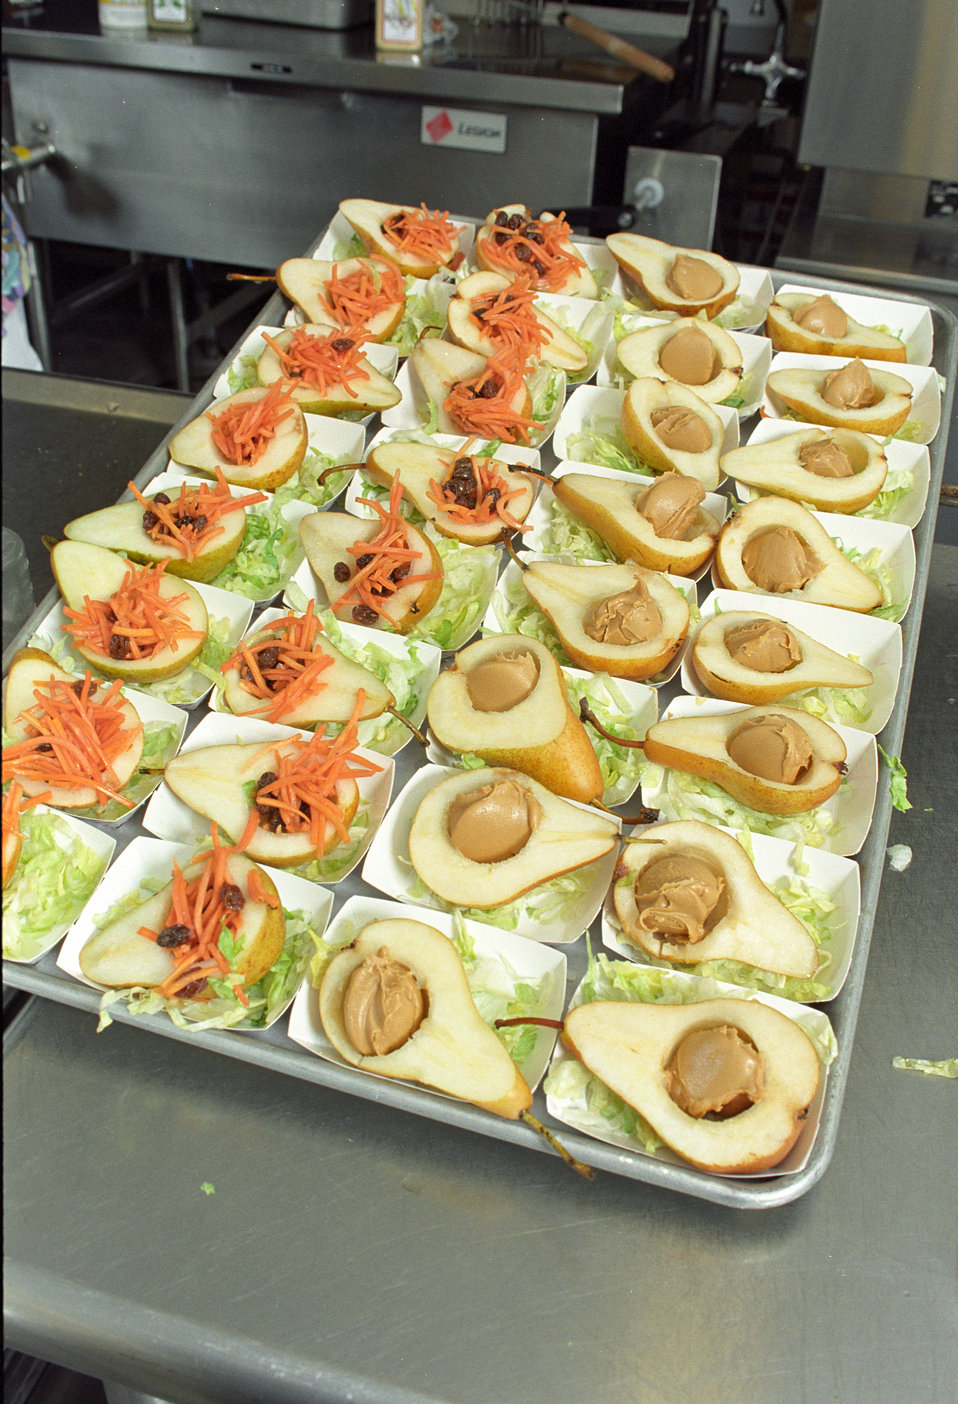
A nutritious snack of peanut butter stuffed and raisins and carrot stuffed pears is prepared at a school in St. Petersburg, FL on January 15, 2003. The U.S. Department of Agriculture's (USDA) Food and Nutrition Service (FNS) Fresh Fruit and Vegetable Program (FFVP) was introduced to schools in 2003. The FFVP provides all children in participating schools with a variety of free fresh fruits and vegetables throughout the school day. It is an effective and creative way of introducing fresh fruits and vegetables as healthy snack options. The FFVP also encourages schools to develop partnerships at the State and local level for support in implementing and operating the program. The Goal of the FFVP is to create healthier school environments by providing healthier food choices, expand the variety of fruits and vegetables children experience, increase children’s fruit and vegetable consumption, and make a difference in children’s diets to impact their present and future health.